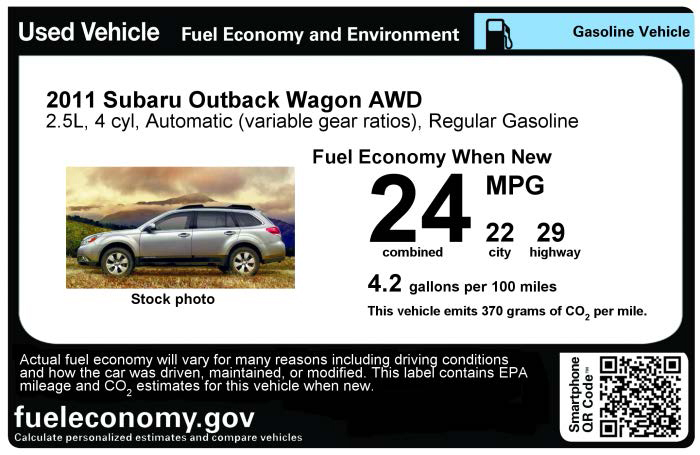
Used Car Fuel Economy Label

Check out our new labeling tool that allows sellers to display their car’s fuel economy we released with the Department of Energy. This tool allows you print or download a label after inputting the car’s make, model, and other details. The label provides city, highway and combined fuel economy, the amount of #CO2 pollution emitted per mile, and the amount of gallons of gasoline used per 100 miles for all used vehicles.